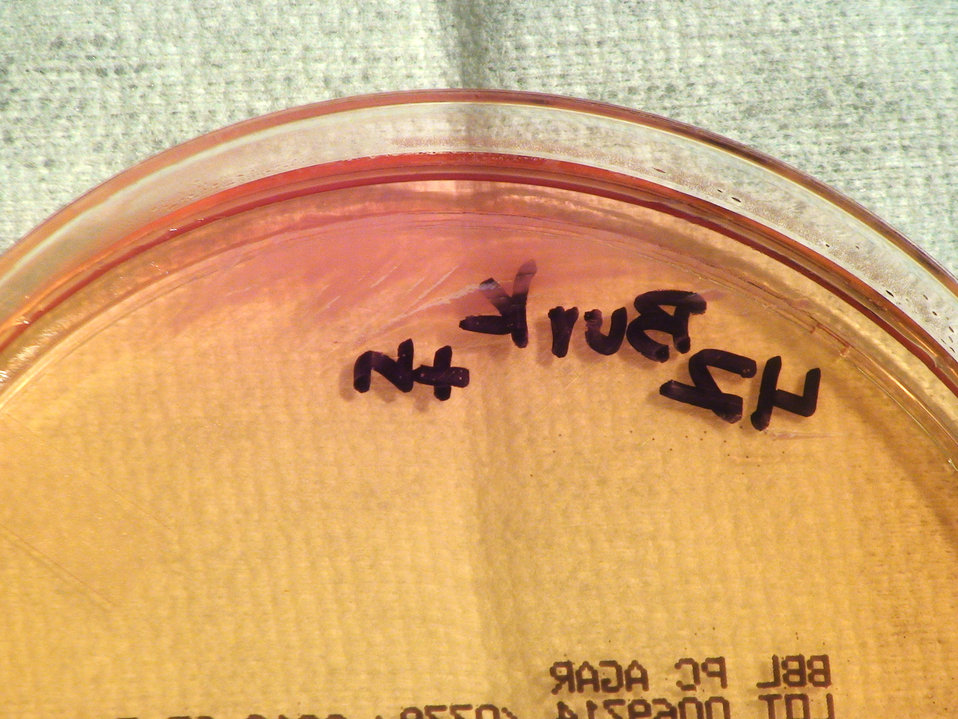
A closer view of PHIL 12429, this photograph depicts the colonial morphology displayed by Gram-negative Burkholderia thailandensis bacteria, which was grown on a medium of Pseudomonas cepacia (PC) agar, for a 24 hour time period, at a temperature of 42�C. See PHIL 12430, for a closer view of these bacterial colonies. Note PHIL 12407 shows the same bacterial specie, grown on the same medium, but at a lesser temperature (37�C), and for twice the time (48hr). PHIL 12416 depicts B. thailandensis bacteria grown on the same medium, at the same temperature (42hr), but for twice the time, and PHIL 12421 and 12422, both grown for the same time (24hr), but at a lesser temperature (37�C).